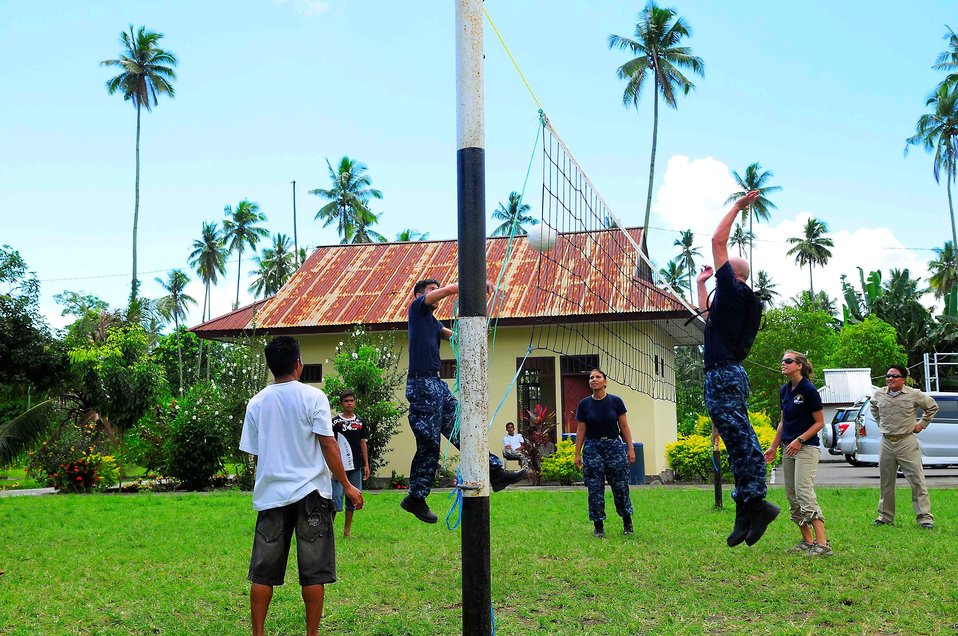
Crewmembers Play Volleyball With Indonesian Children

Crewmembers embarked aboard the Military Sealift Command hospital ship USNS Mercy (T-AH 19) play a friendly game of volleyball with children at a community service event at the Rumah Sejahtera Bagi Anak Orphanage, in support of Pacific Partnership 2010 in Tobelo, Indonesia, on July 14, 2010. Pacific Partnership 2010 is the fifth in a series of annual U.S. Pacific Fleet endeavors conducted in Indonesia as a disaster relief exercise to strengthen regional partnerships.